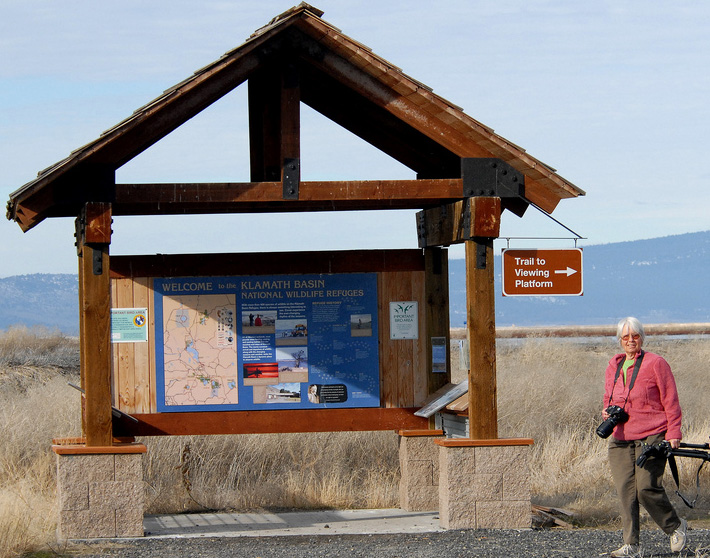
Upper Klamath NWR Entrance